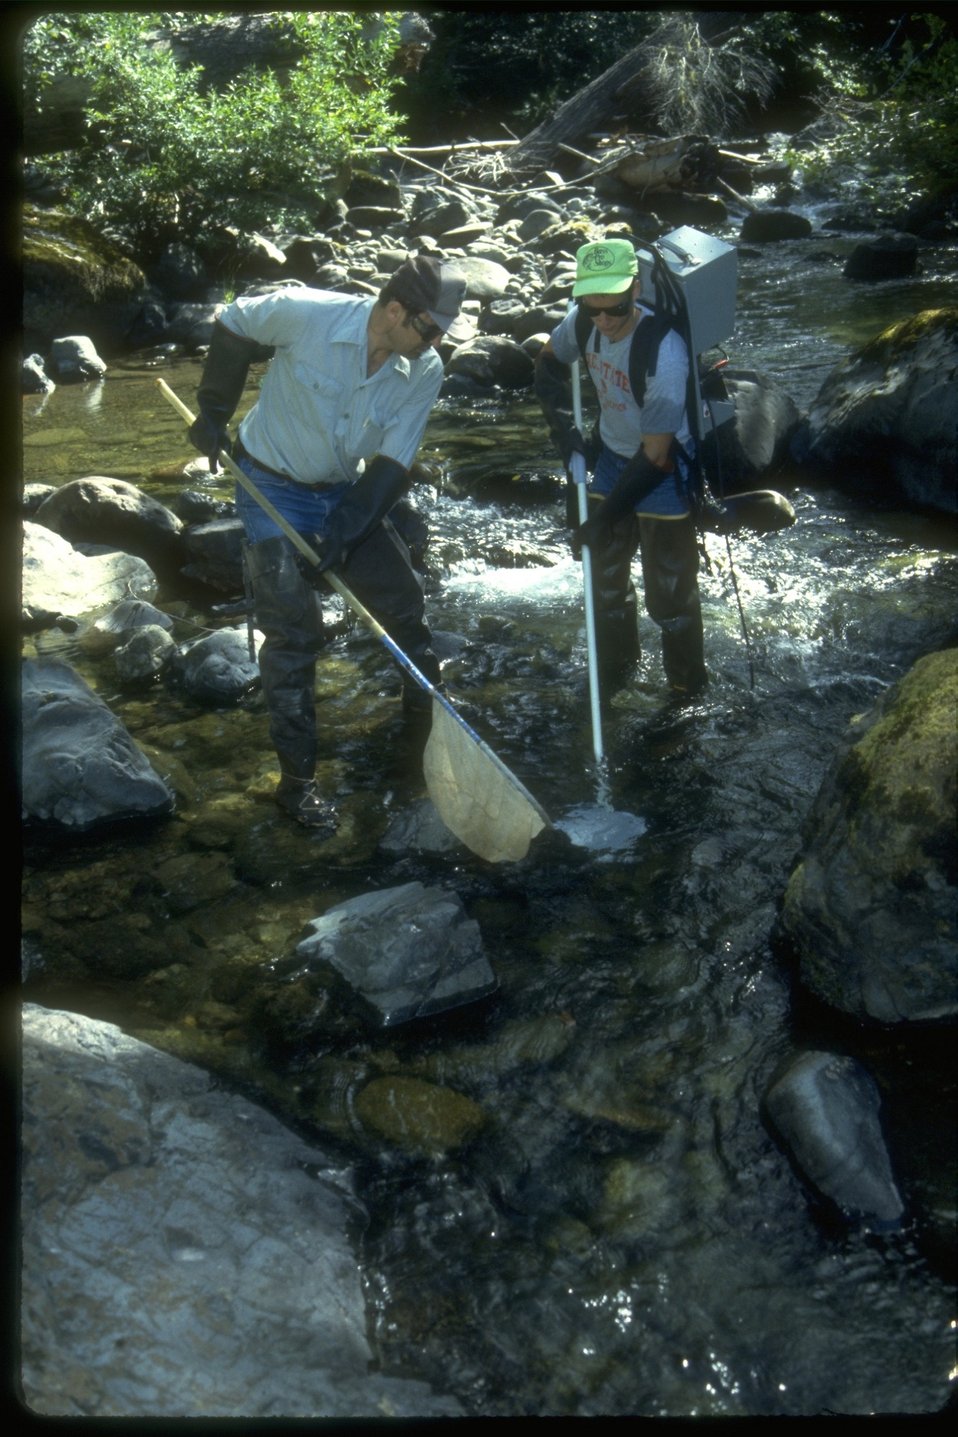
Workers electro shock fishing.